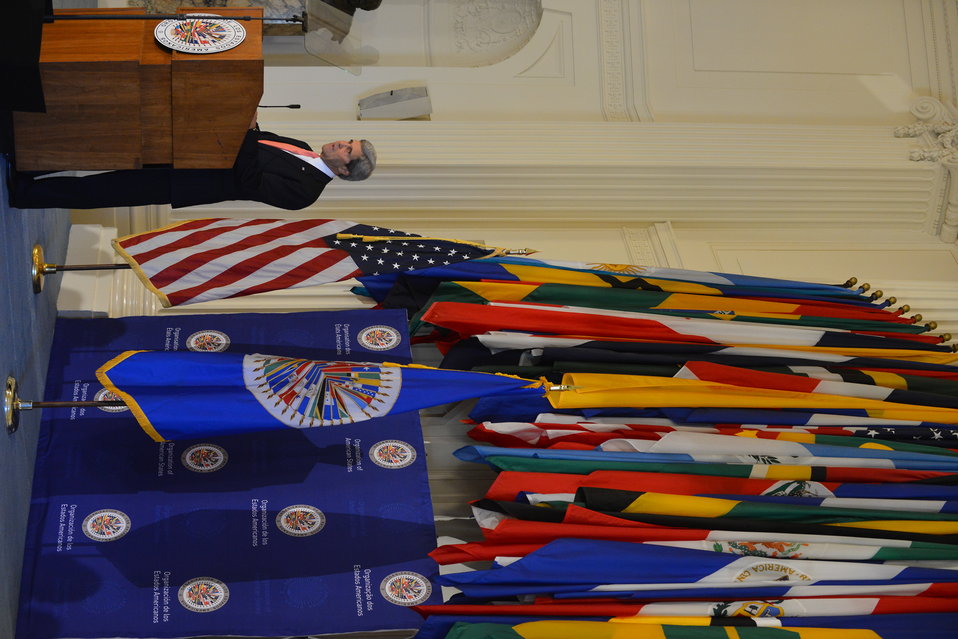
Secretary Kerry Delivers Remarks on U.S. Policy in the Western Hemisphere

U.S. Secretary of State John Kerry delivers remarks on U.S. Policy in the Western Hemisphere at the Organization of American States in Washington, D.C., on November 18, 2013.